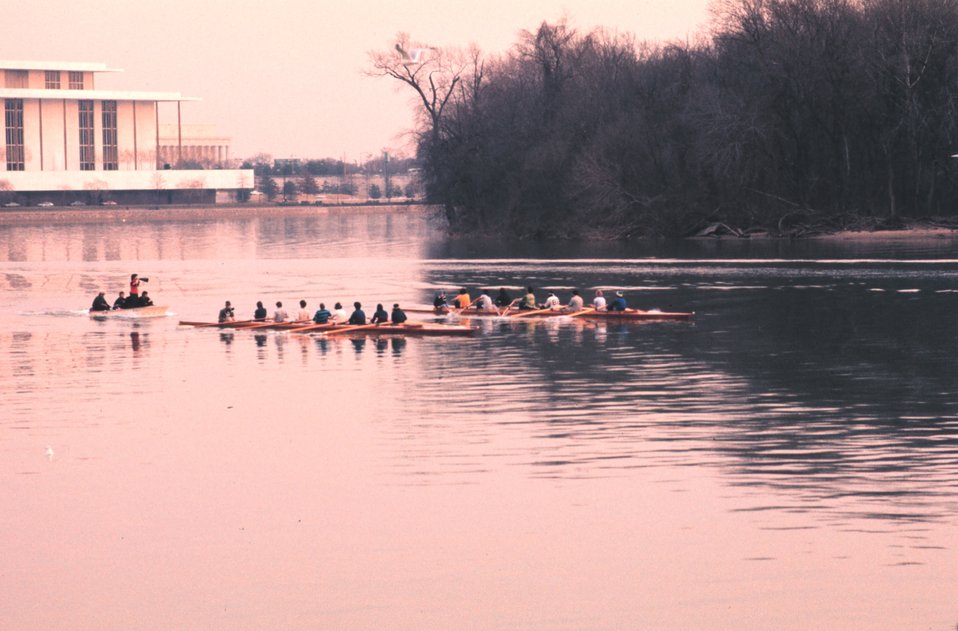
Early morning sculling on the Potomac with the Kennedy Center to left